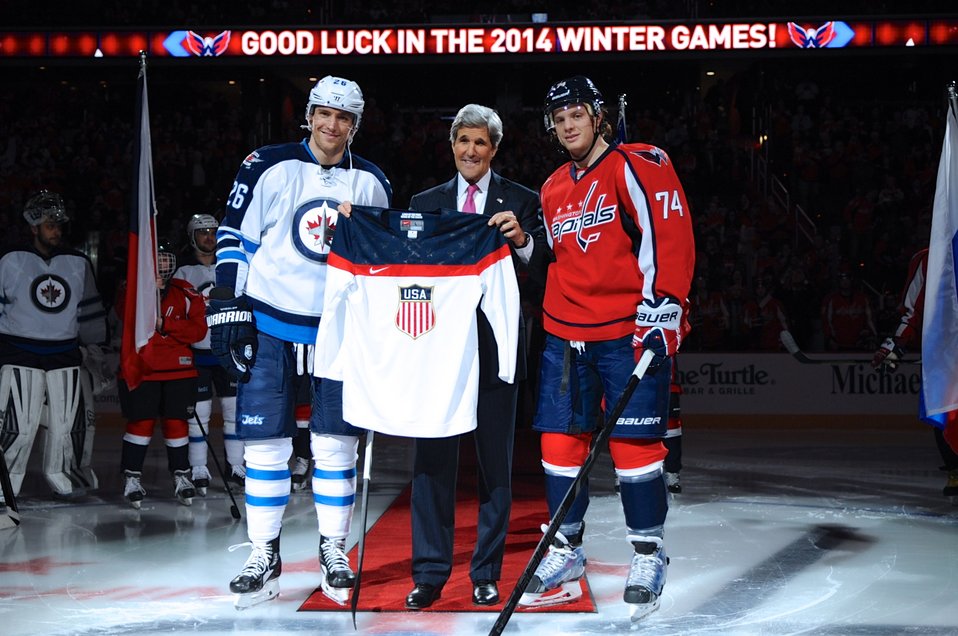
Secretary Kerry Poses After Ceremonial Puck Drop With U.S. Olympians Wheeler, Carlson

U.S. Secretary of State John Kerry holds a Team USA Jersey with Winnipeg Jets player Blake Wheeler and Washington Capitals player John Carlson -- both members of Team USA -- after honoring Olympics-bound hockey players before the Washington Capitals-Winnipeg Jets game at the Verizon Center in Washington, D.C., on February 6, 2014.